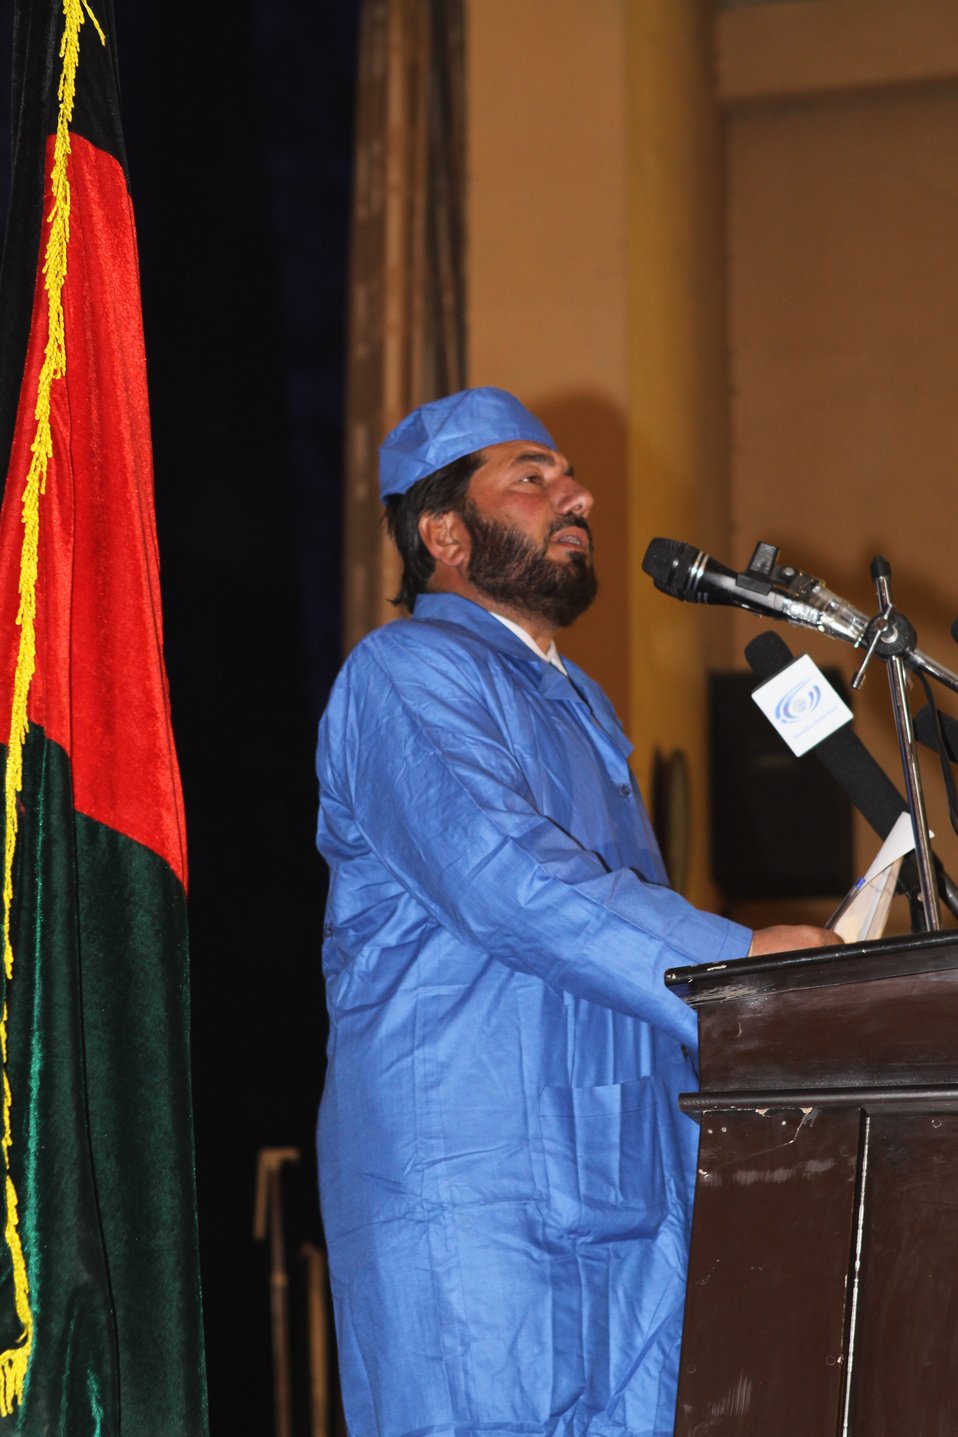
Community Health Workers Celebrated

Kabul, Afghanistan | December 5, 2010 — In support of the United Nations designated International Volunteer Day for Economic and Social Development, Afghanistan’s Ministry of Public Health celebrated its annual Community Health Worker Day today. Acting Minister of Public Health Dr. Suraya Dalil, USAID Senior Deputy Mission Director Robert Hellyer, other government officials, and international donors joined in recognizing the critical contribution of community health workers in Afghanistan and encouraging them to continue their voluntary support to their communities.
The event praised the contributions of the more than 22,000 volunteers throughout the country who deliver community level health-education, counseling, and services out of village health posts located in private homes. The Ministry of Public Health envisioned that community-based healthcare programs will actively encourage communities and families to adopt healthy lifestyles and behaviors, and provide families access to high quality and socially acceptable preventative medicine and life-saving services.
“We have 22,000 community health workers in Afghanistan that are able to implement the basic and standard medicines. They all have been trained through a job description,” said Minister Dalil. Addressing the health workers, she added, “I am proud and feel powerful that I have people like you.”
USAID-funded health projects collaborate closely with the Ministry of Public Health to improve the health and nutritional status of Afghans, provide quality primary healthcare, and promote healthy behaviors at the community and household-levels. USAID supported the training of more than 9,000 of the volunteer community health workers currently working in Afghanistan.
“On behalf of the American people, I congratulate the Community Health Workers for their diligence to gain the skills and knowledge necessary to serve their communities in this important role,” said USAID Senior Deputy Mission Director Hellyer. “USAID strongly supports community based health care and believes that quality community-based health services are essential to reaching Afghanistan’s Millennium Development Goals.”
To support the Basic Package of Health Services, USAID assisted in developing the community health worker training manual, helped train community health worker supervisors and master-trainers, facilitated in-service training, and produced and developed reporting tools, job aids, and education materials.